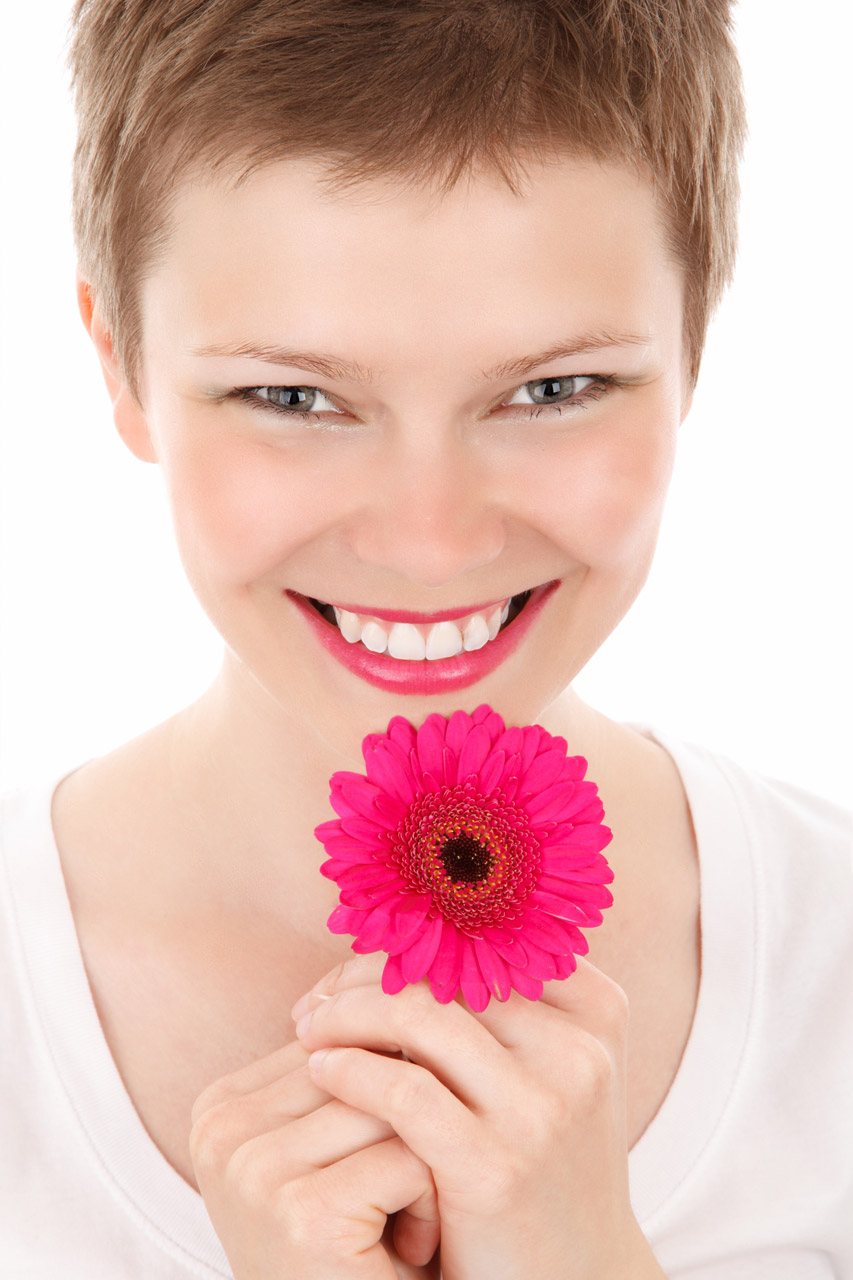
Smiling woman with a flower

Smiling woman with a single pink flower isolated on white background - jana svojsova.